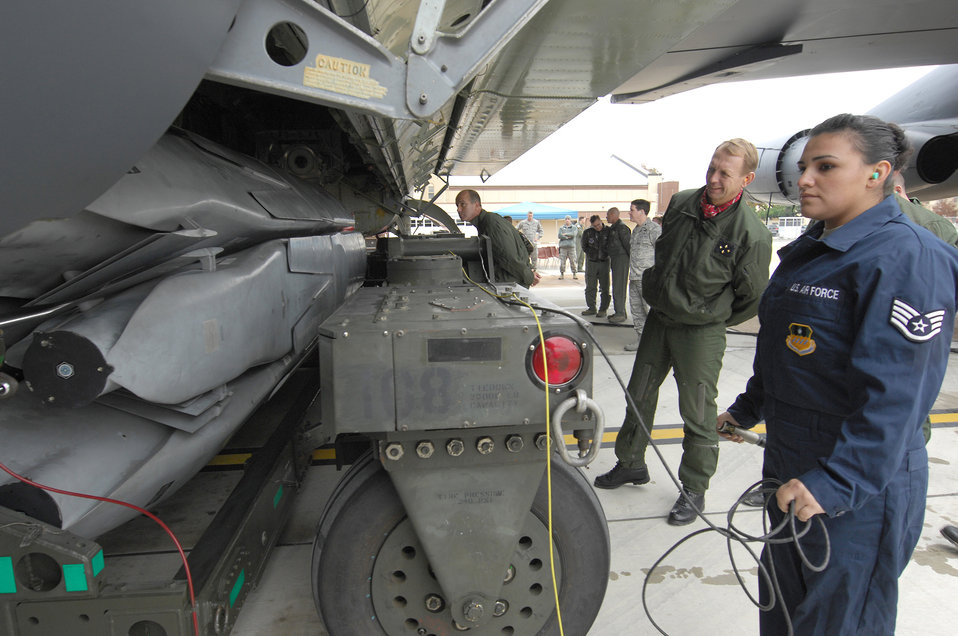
Global Strike Command officials build partnership with French

French Lt. Gen. Paul Fouilland and a delegation of French military officers watch Staff Sgt. Tahnee Bouvy demonstrate how her team operates a weapons loader for a B-52 Stratofortress Nov. 15, 2010, during their visit to Air Force Global Strike Command. General Fouilland is the French Strategic Air Forces commander-in-chief and Sergeant Bouvy is a weapons load team member from the 2nd Bomb Wing at Barksdale Air Force Base, La.